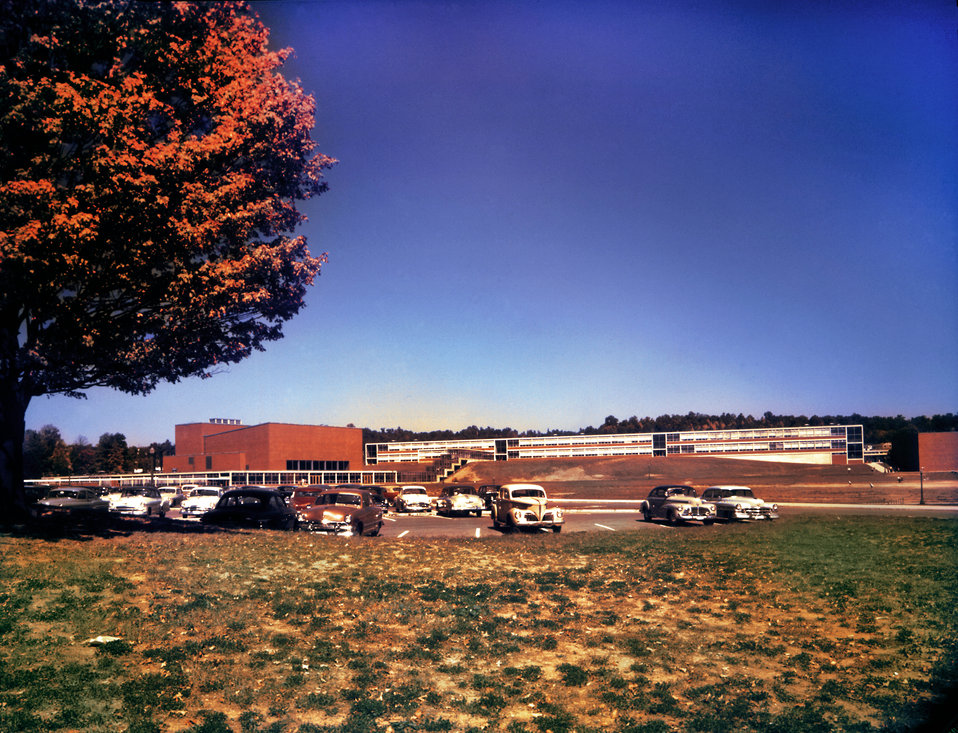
Oak Ridge High School

58-1207 Photo by Ed Westcott High School Grove Center Oct. 1952 Oak Ridge Tennessee